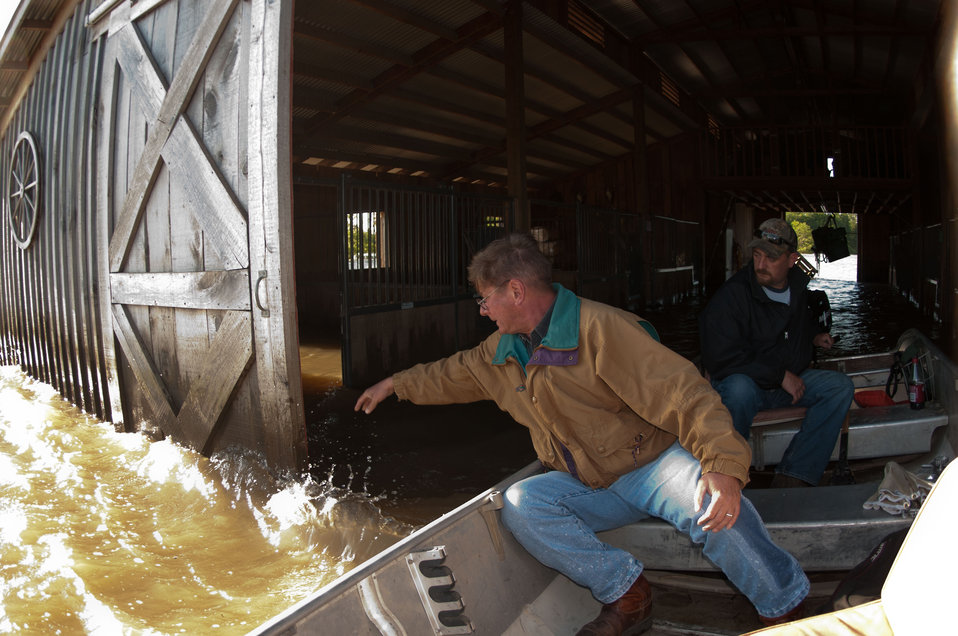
Joe Higdon has to push the barn door farther open to allow the boat out of his barn on President's Island. The island is still submerged under 6-12 feet of Mississippi River waters near Memphis, TN, on Sunday, May 15. 2011.